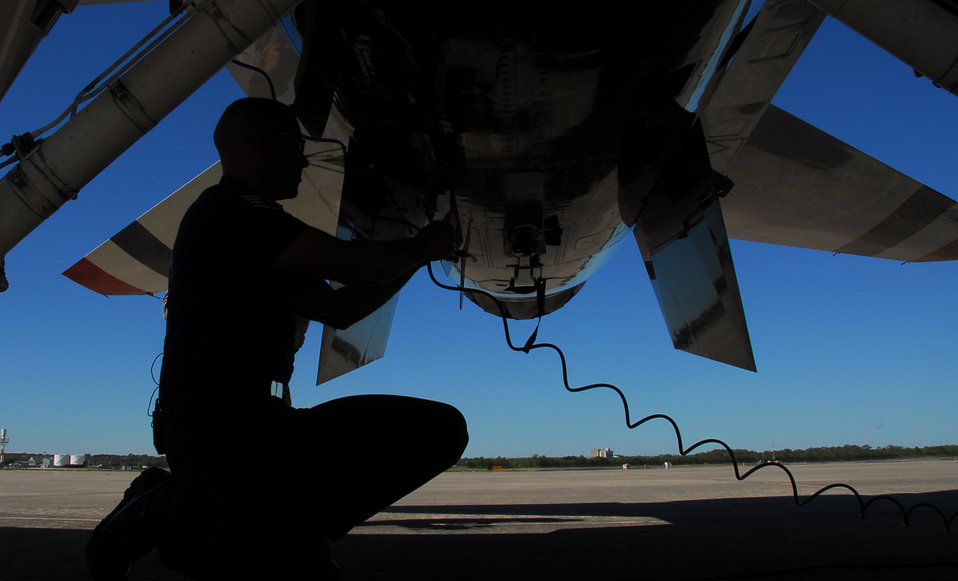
Thunderbirds maintainers keep show running behind the scenes

An Air Force Thunderbirds maintainer performs a pre-inspection on a Thunderbird F-16 Fighting Falcon prior to a flight Nov. 5, 2010, at Lackland Air Force Base, Texas. Unlike any other fighter squadron in the Air Force, the Thunderbird pilots do not do a typical walk-around inspection but rely on their crew chiefs to carry out that responsibility. The air demonstration team was at Lackland AFB to perform during AirFest 2010.